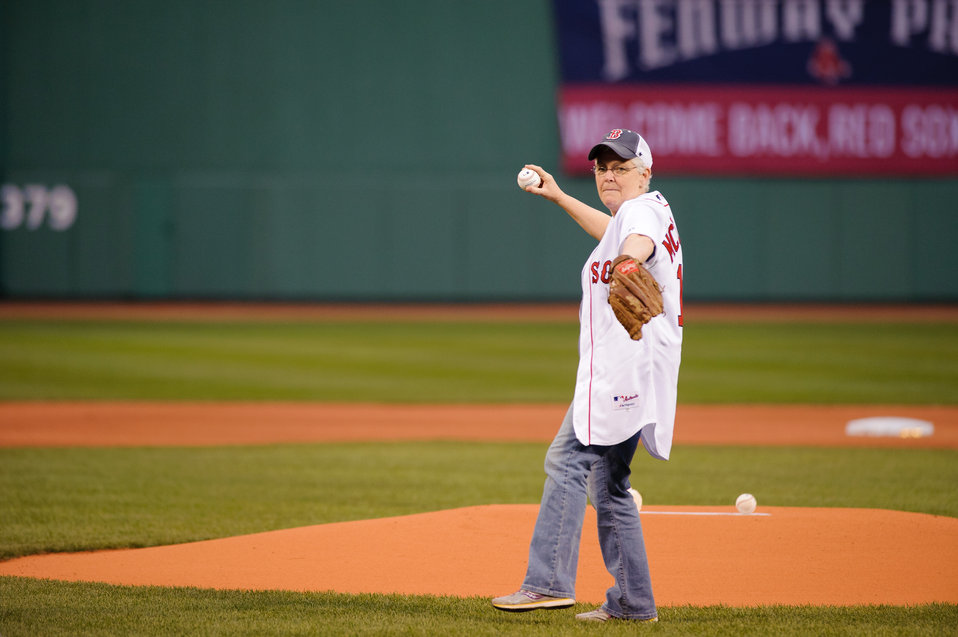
A Day In The Life of the EPA Administrator - April 22, 2014 7:07 pm

First pitch!